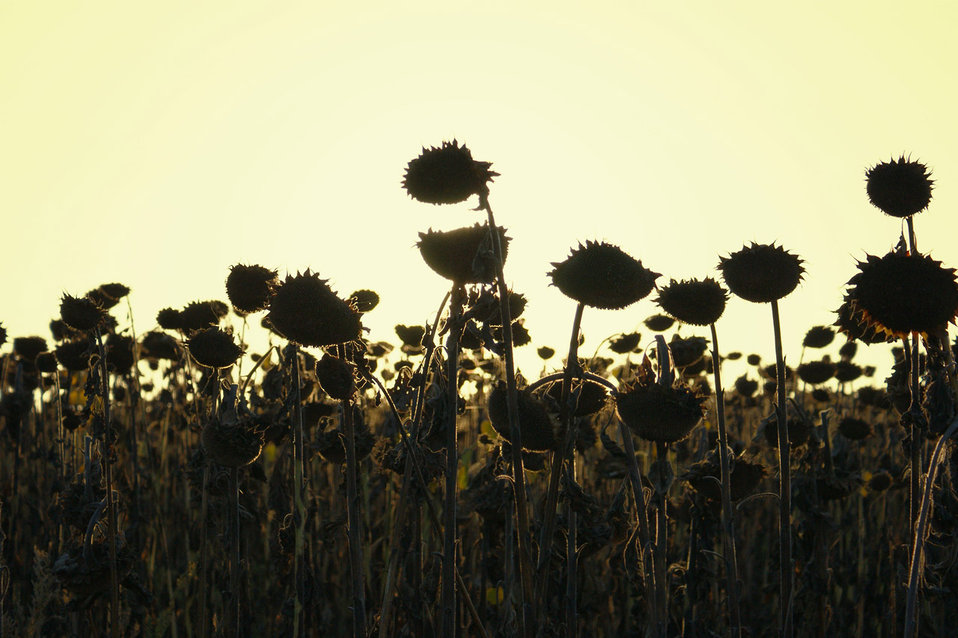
Sunflower

Backlit sunflower.